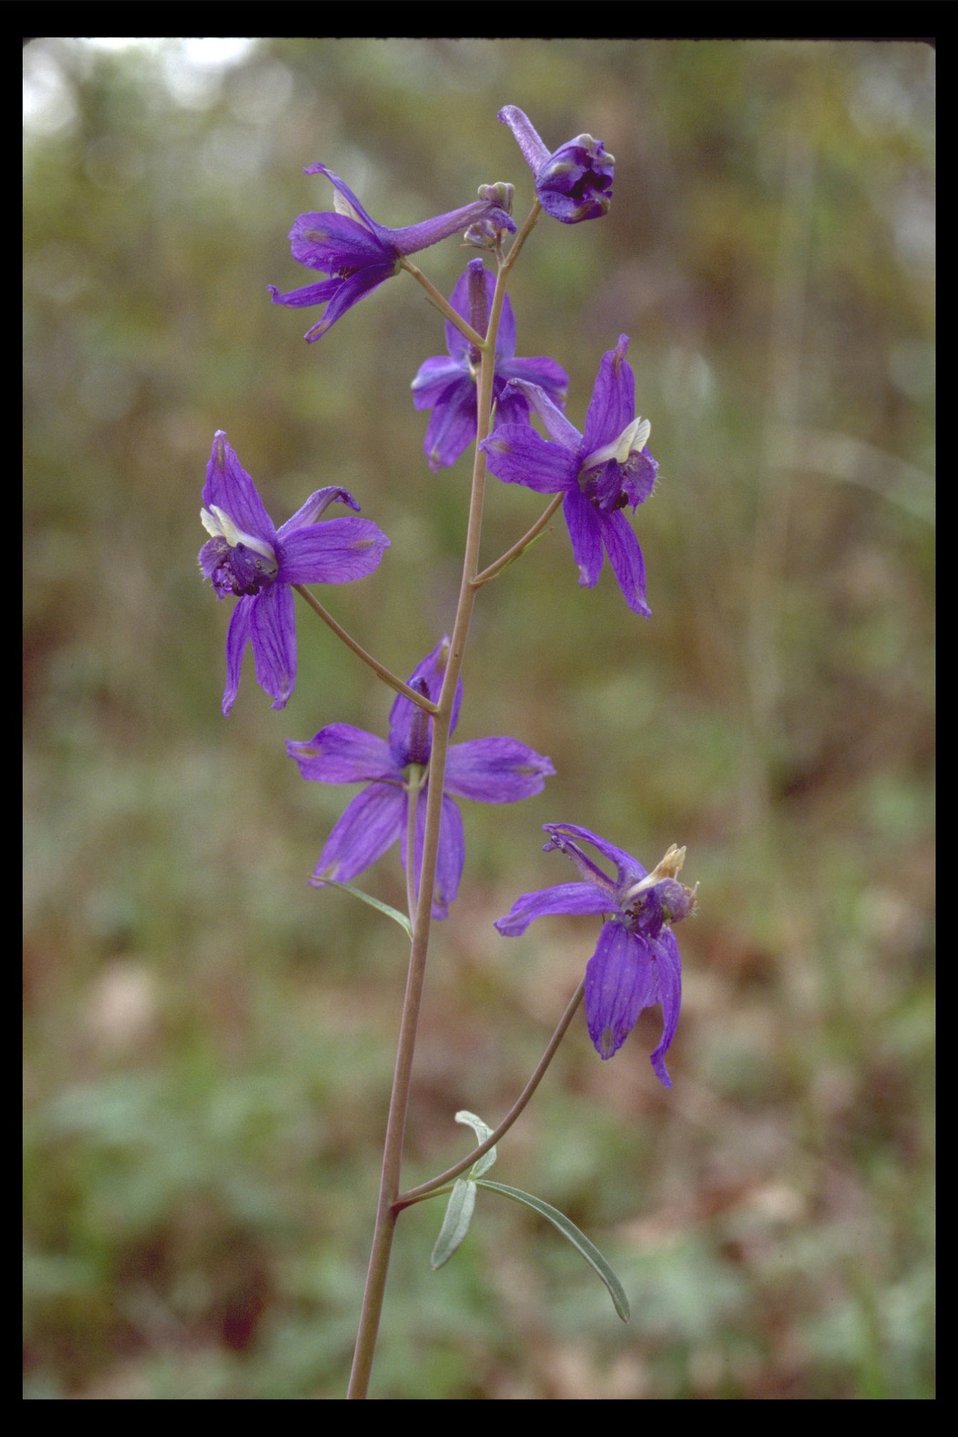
Larkspur (Delphinium sp.) found along Tiller Highway.